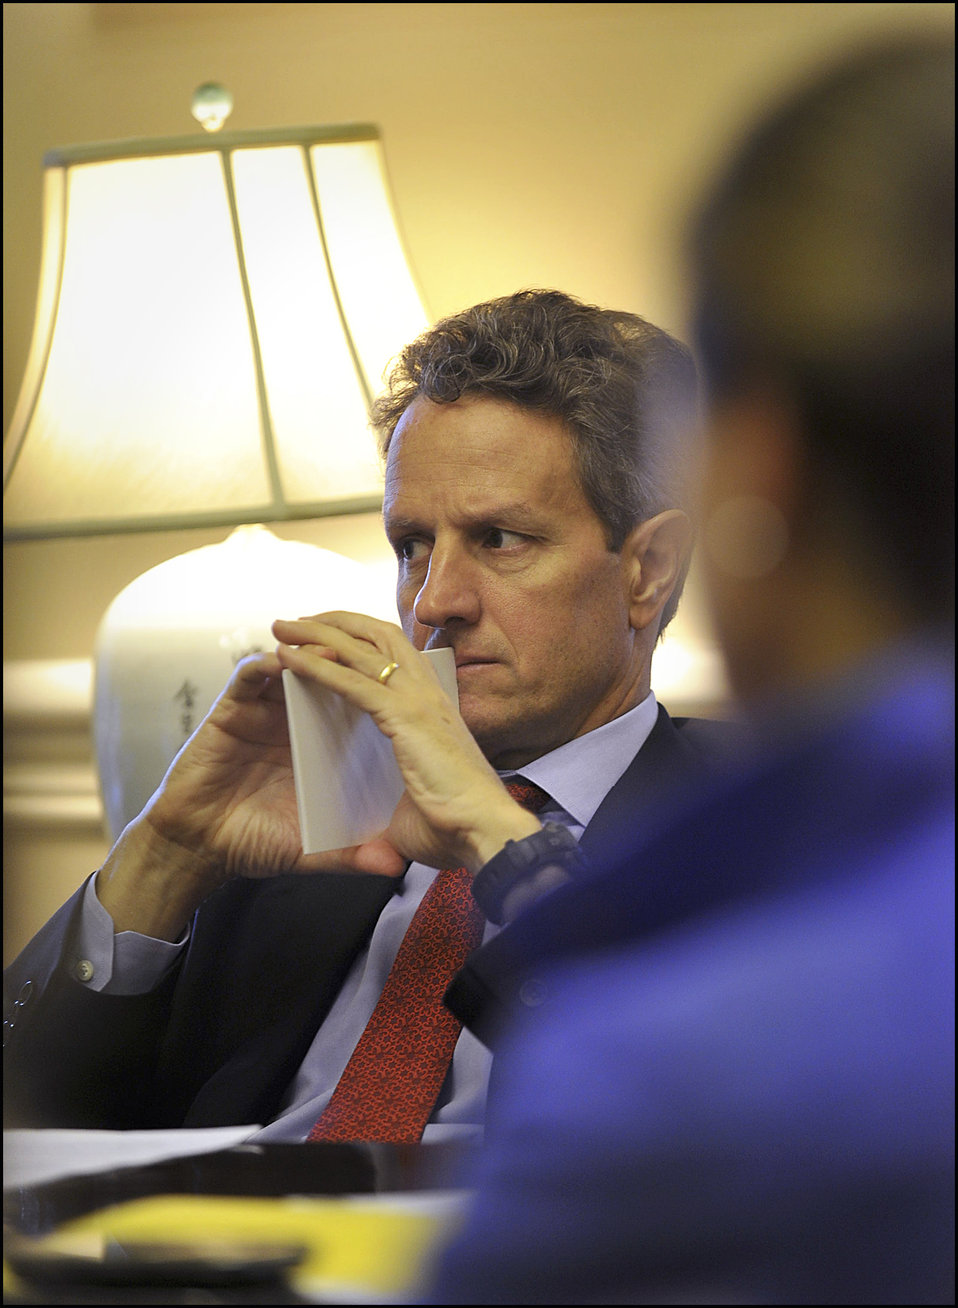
Behind the Scenes: Debt Limit

Treasury Secretary Tim Geithner at a morning senior staff meeting on raising the debt limit on Monday, August 1, 2011.